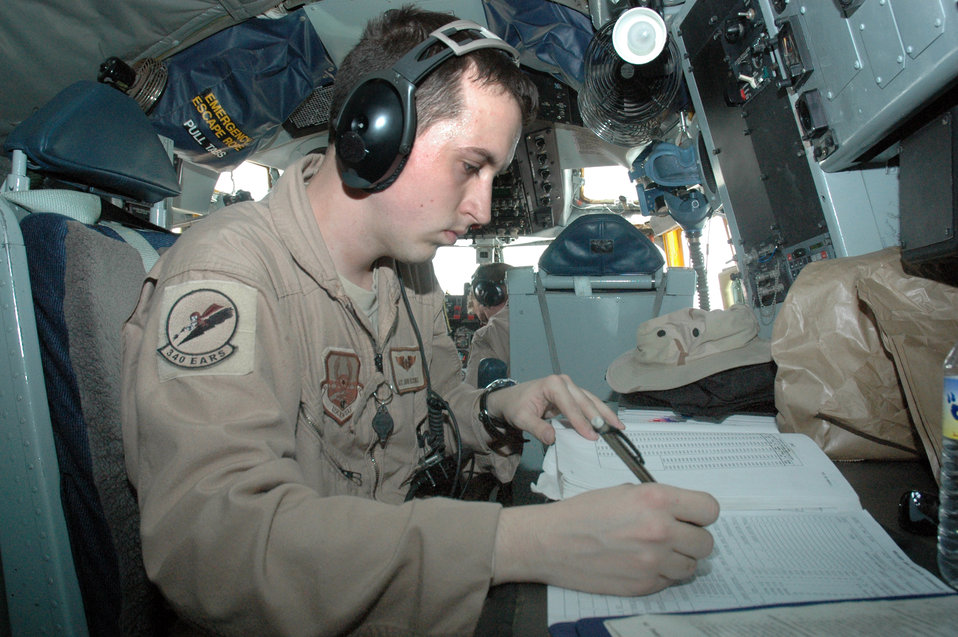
Tankers keep aircraft in the fight 24-7

Airman 1st Class John Reschke calculates the weight and balance of a KC-135 Stratotanker March 22 before takeoff from a forward deployed location for a refueling mission. Airman Reschke is a tanker boom operator for the 340th Air Refueling Squadron. The aircrews refuel a variety of coalition aircraft throughout the region with aircraft that are oftentimes twice the age of the Airmen who fly and maintain them. .